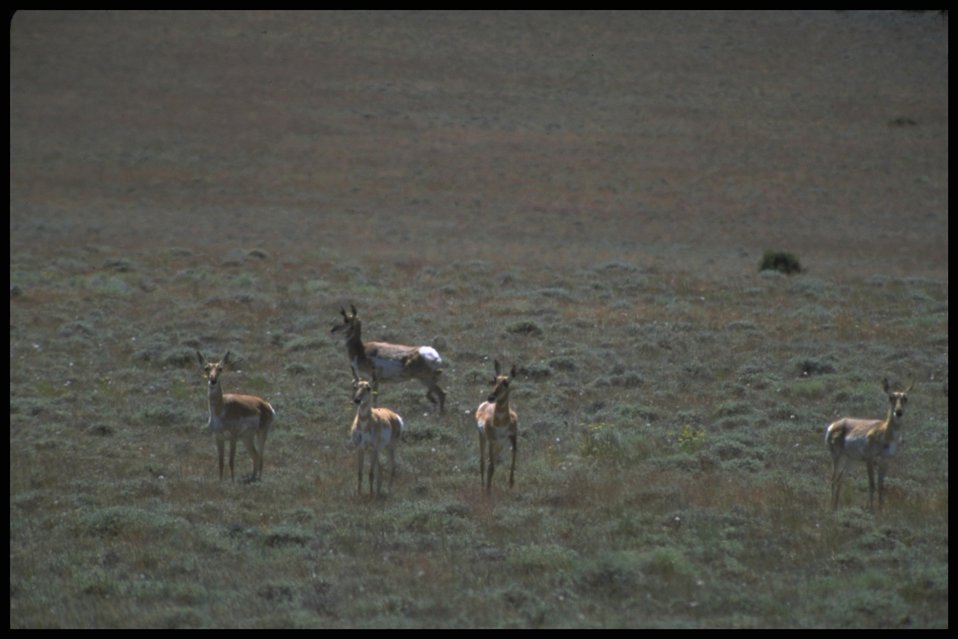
Far shot of Antelope kids. Lakeview District.